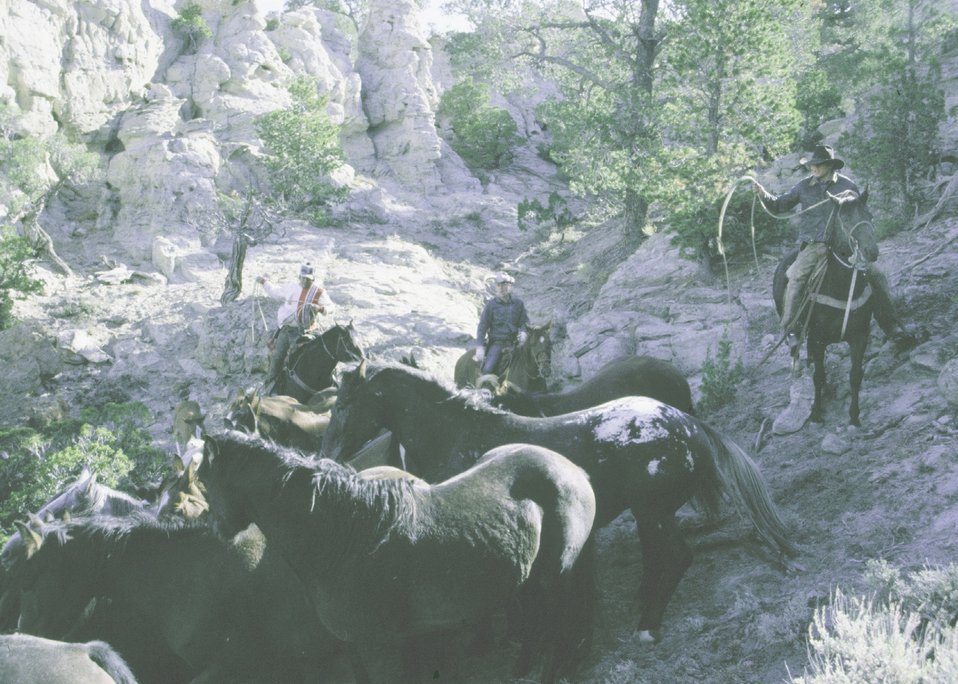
A group of wild horses on a hillside in Wyoming.